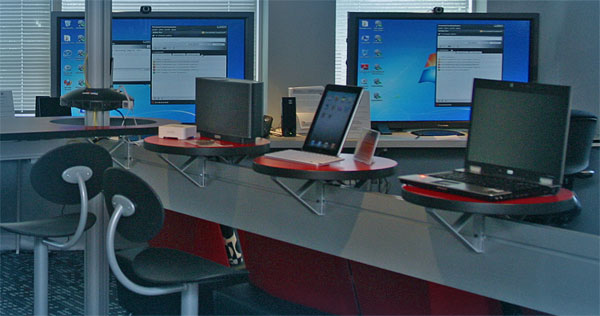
TEC Center

Debuting the FCC TEC Center on Wednesday July 13, 2011